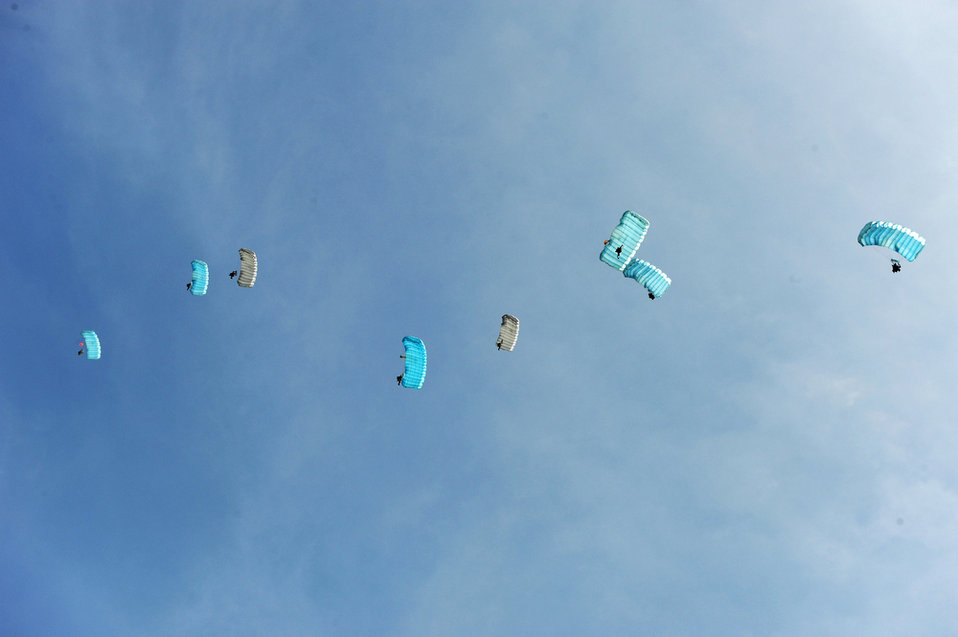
U.S., Indonesian airmen jump into training

Indonesian airmen jump from an Air Force C-130 Hercules assigned to 36th Airlift Squadron at Yokota Air Base, Japan, during Exercise Cope West 2010 April 21, 2010, in Indonesia.